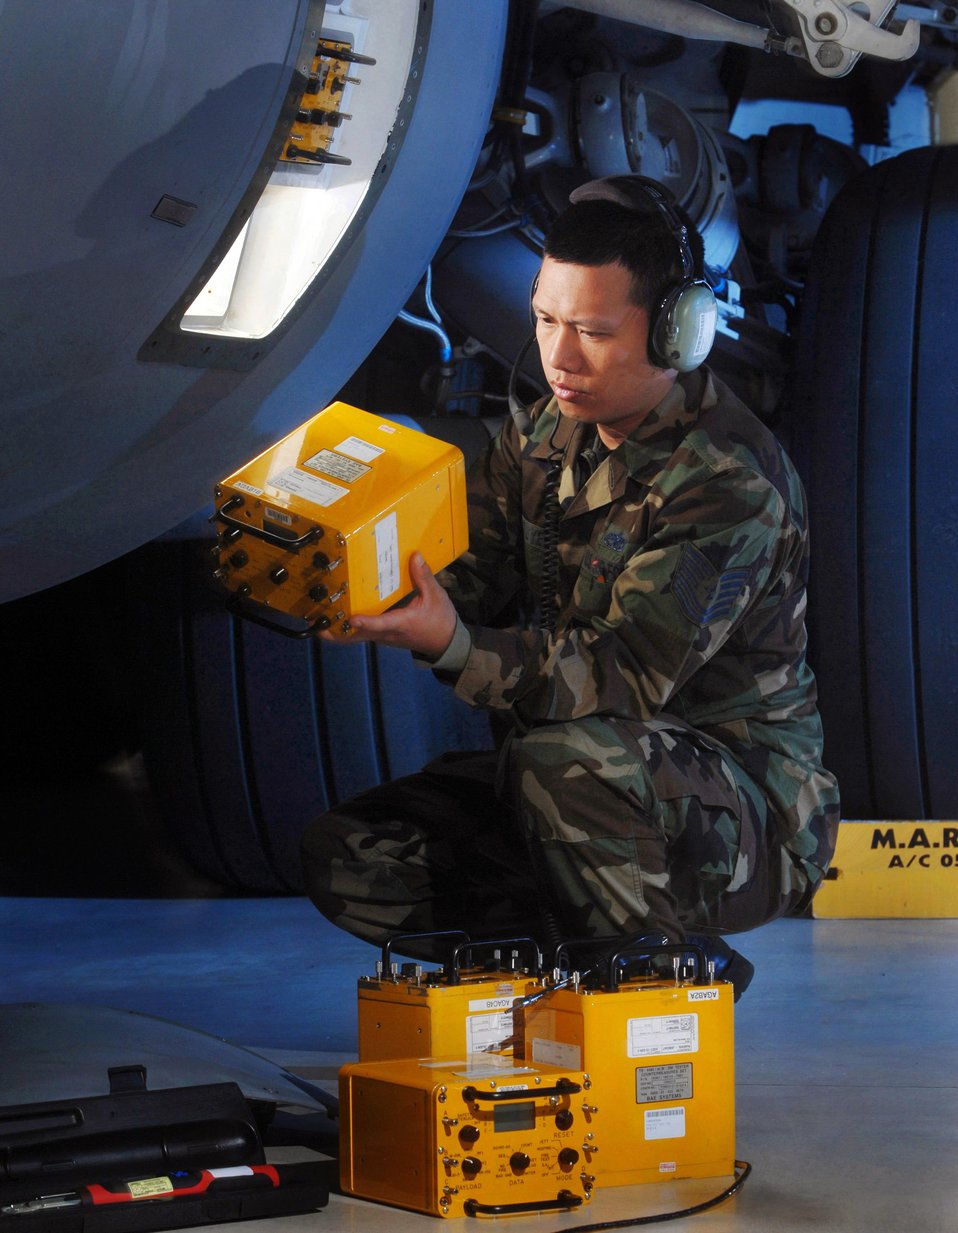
Avoiding the enemy

Tech. Sgt. Truong Nguyen installs an AN/ALM-288 countermeasures test set on a C-17 Globemaster III cargo aircraft April 2 at March Air Reserve Base, Calif. Sergeant Nguyen is an electronic warfare technician with the Air Force Reserve.